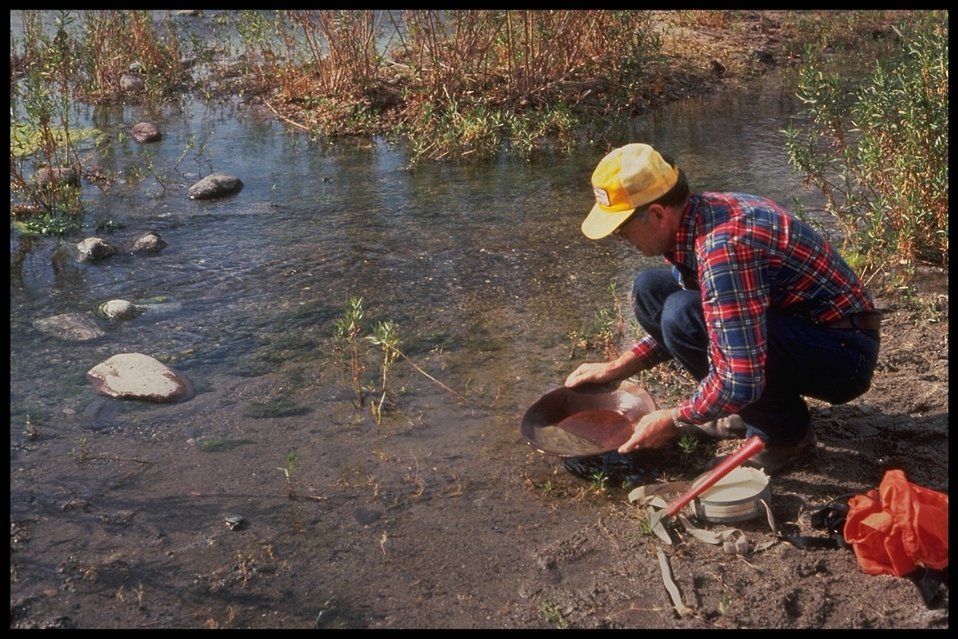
A visitor to Arizona public lands relives a time honored experience, gold panning.